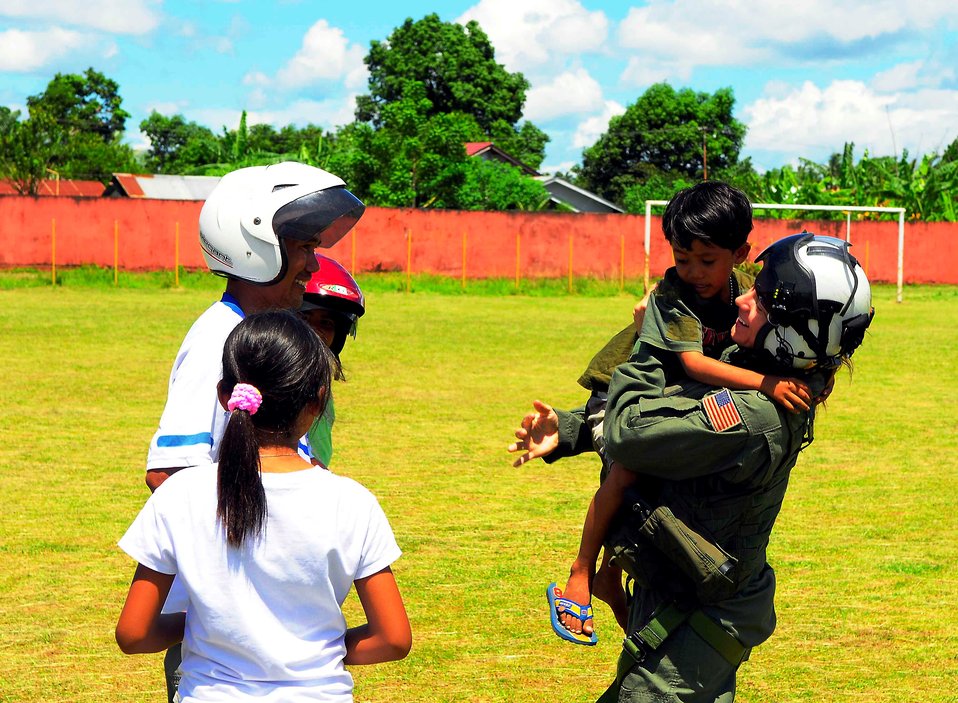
Helicopter Sea Combat Squadron 23 “Wild Cards” Naval Air Crewman 2nd Class (AW) Kyle Parrish embraces a small boy for a photo, after an MH-60S Knighthawk helicopter disembarked crewmembers from the Military Sealift Command hospital ship USNS Mercy (T-AH 19) in support of Pacific Partnership 2010 in Tobelo, Indonesia, on July 13, 2010. Pacific Partnership 2010 is the fifth in a series of annual U.S. Pacific Fleet humanitarian and civic assistance endeavors to strengthen regional partnerships.